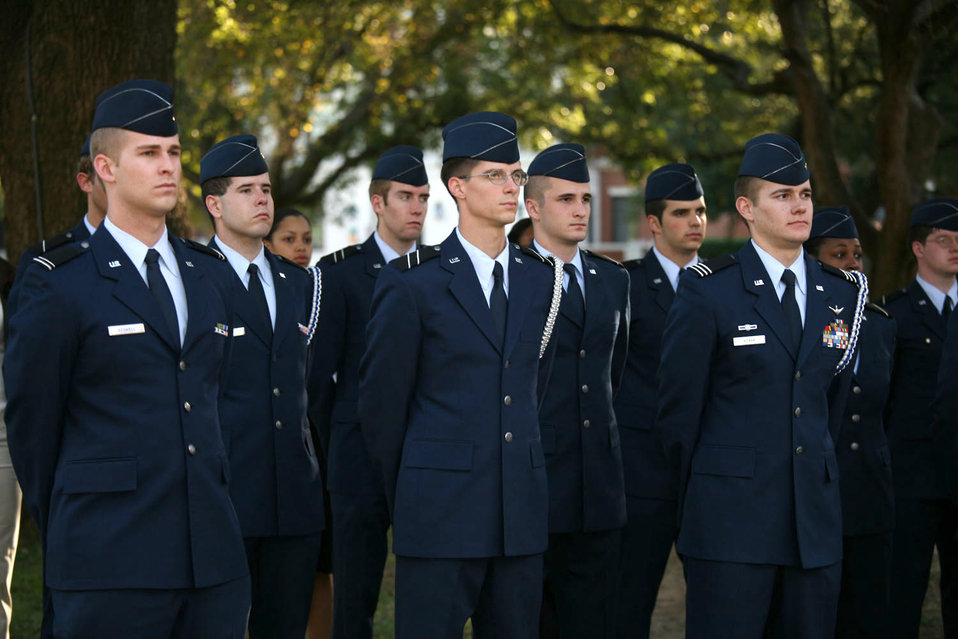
Baylor University ROTC unit celebrates 60th birthday

The Baylor University Air Force Reserve Officer Training Corps Detachment 810 Cadets stand in formation during a cermony at the university in Waco, Texas, recently. The unit celebrated its 60th anniversary on the Baylor campus, commissioning 1,301 second lieutenants though the program during that time.